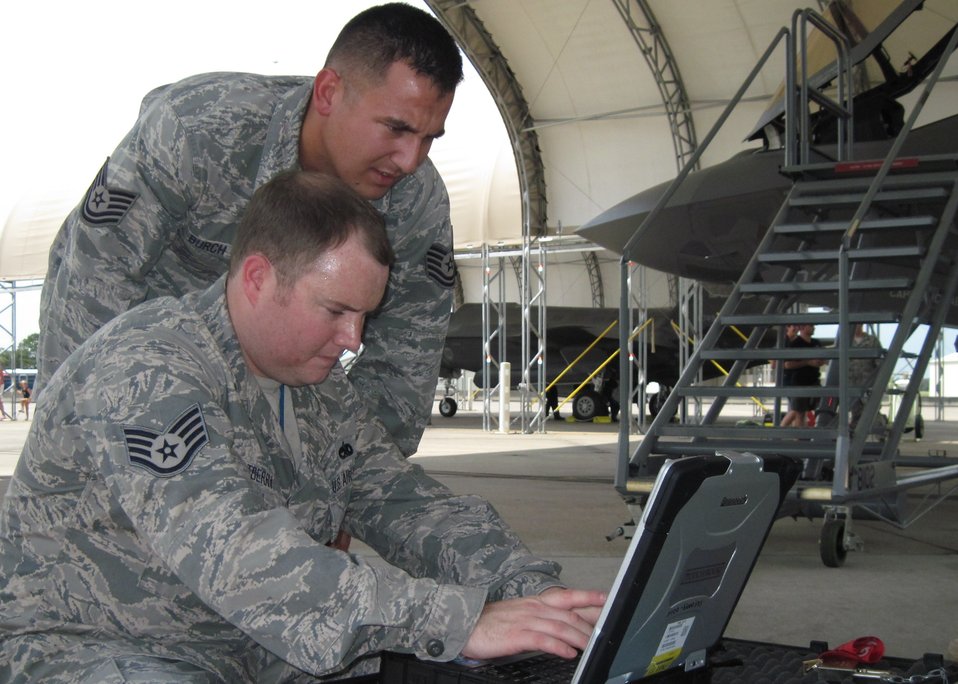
Twin JSF arrival

Tech. Sgt. Matthew Burch and Staff Sgt. Jason Westberry, both from the 58th Aircraft Maintenance Unit, review post-operations tasks on their portable maintenance aid after the fourth F-35 Lightning II taxied into its new home at Eglin Air Force Base, Fla., Aug. 31, 2011. The Airmen are among the first Department of Defense maintainers trained by Lockheed Martin logistics support personnel in the joint strike fighter's recovery and inspection procedures.